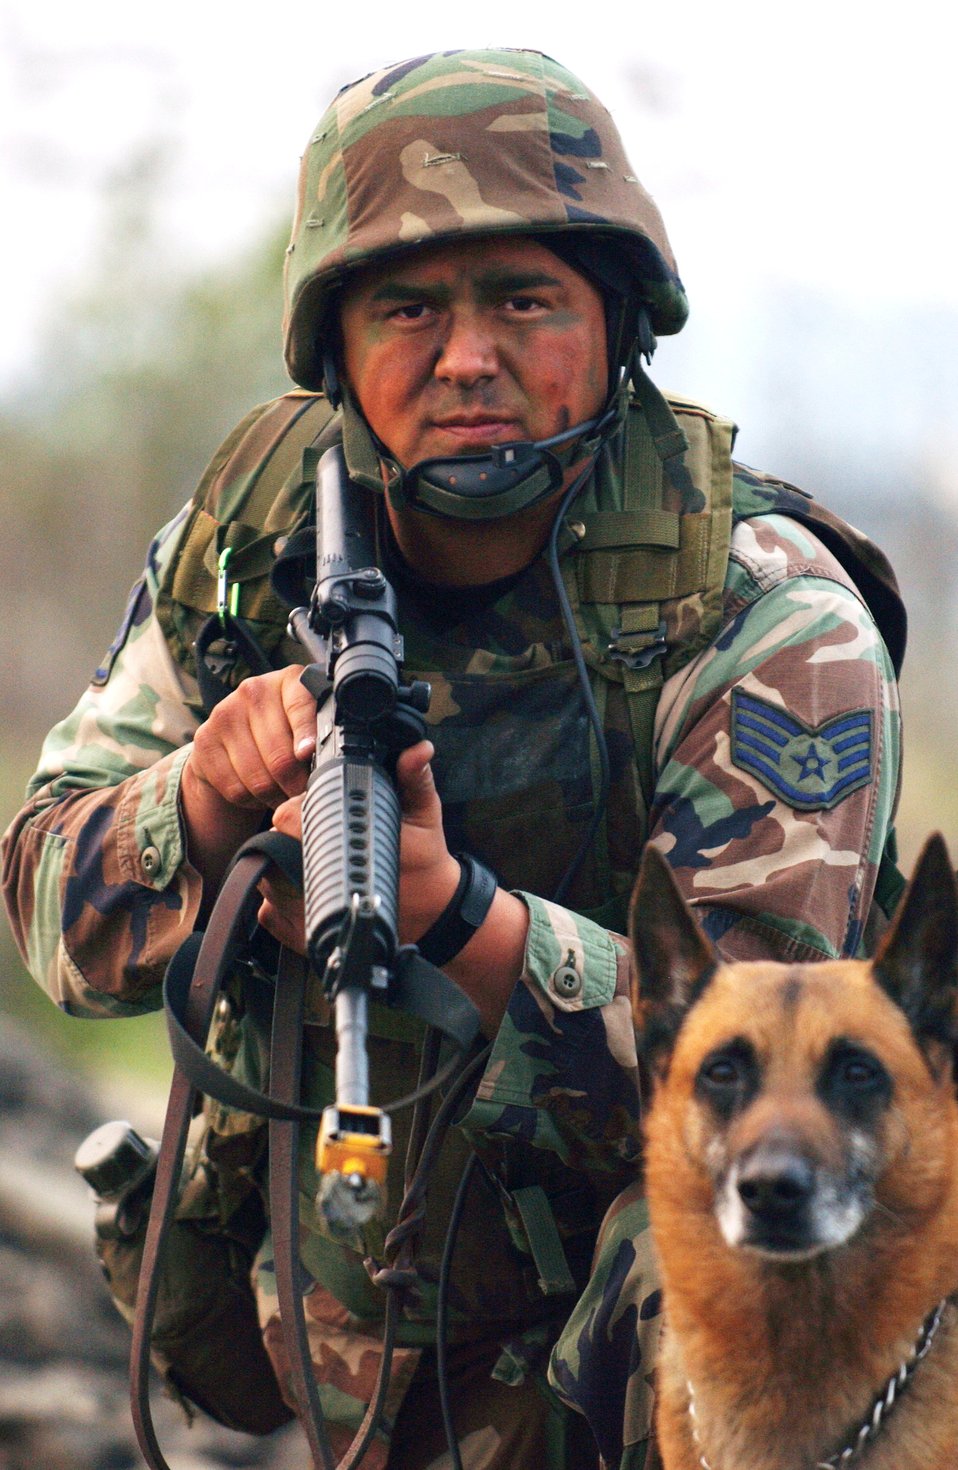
Commando Warrior prepares Airmen for war on terrorism

Staff Sgt. Steve Montez patrols the area with his military working dog in a simulated attack during a Commando Warrior class exercise at Osan Air Base, South Korea. Commando Warrior trains Airmen throughout the Pacific Air Forces area for deployments supporting the war on terrorism. Sergeant Montez is assigned to Kadena AB, Japan.